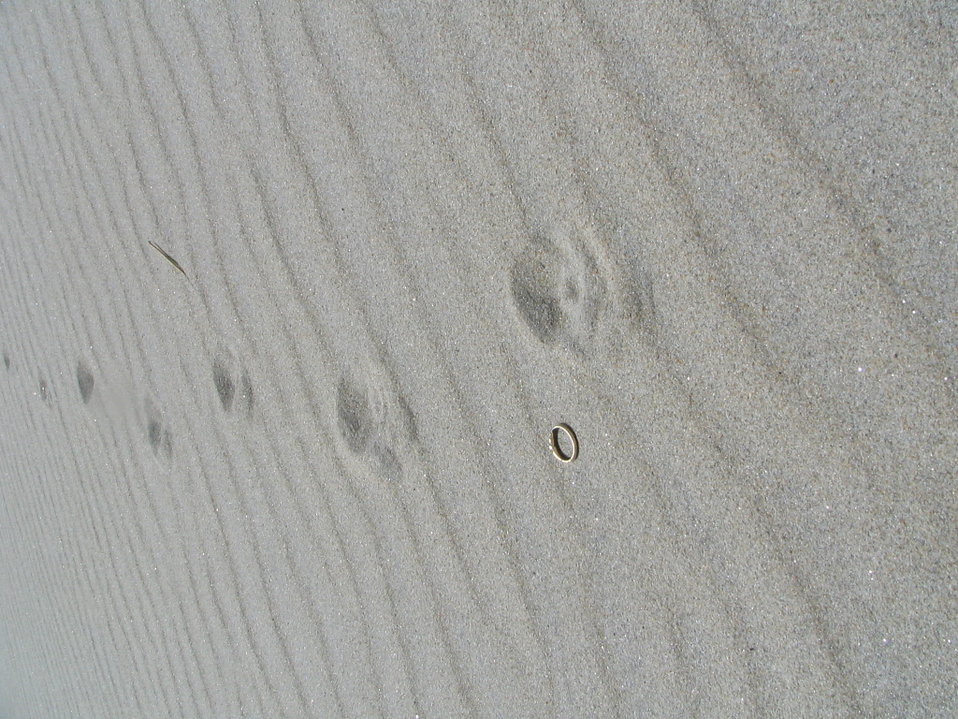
Feral Cat Tracks

Plover Beach, NH.